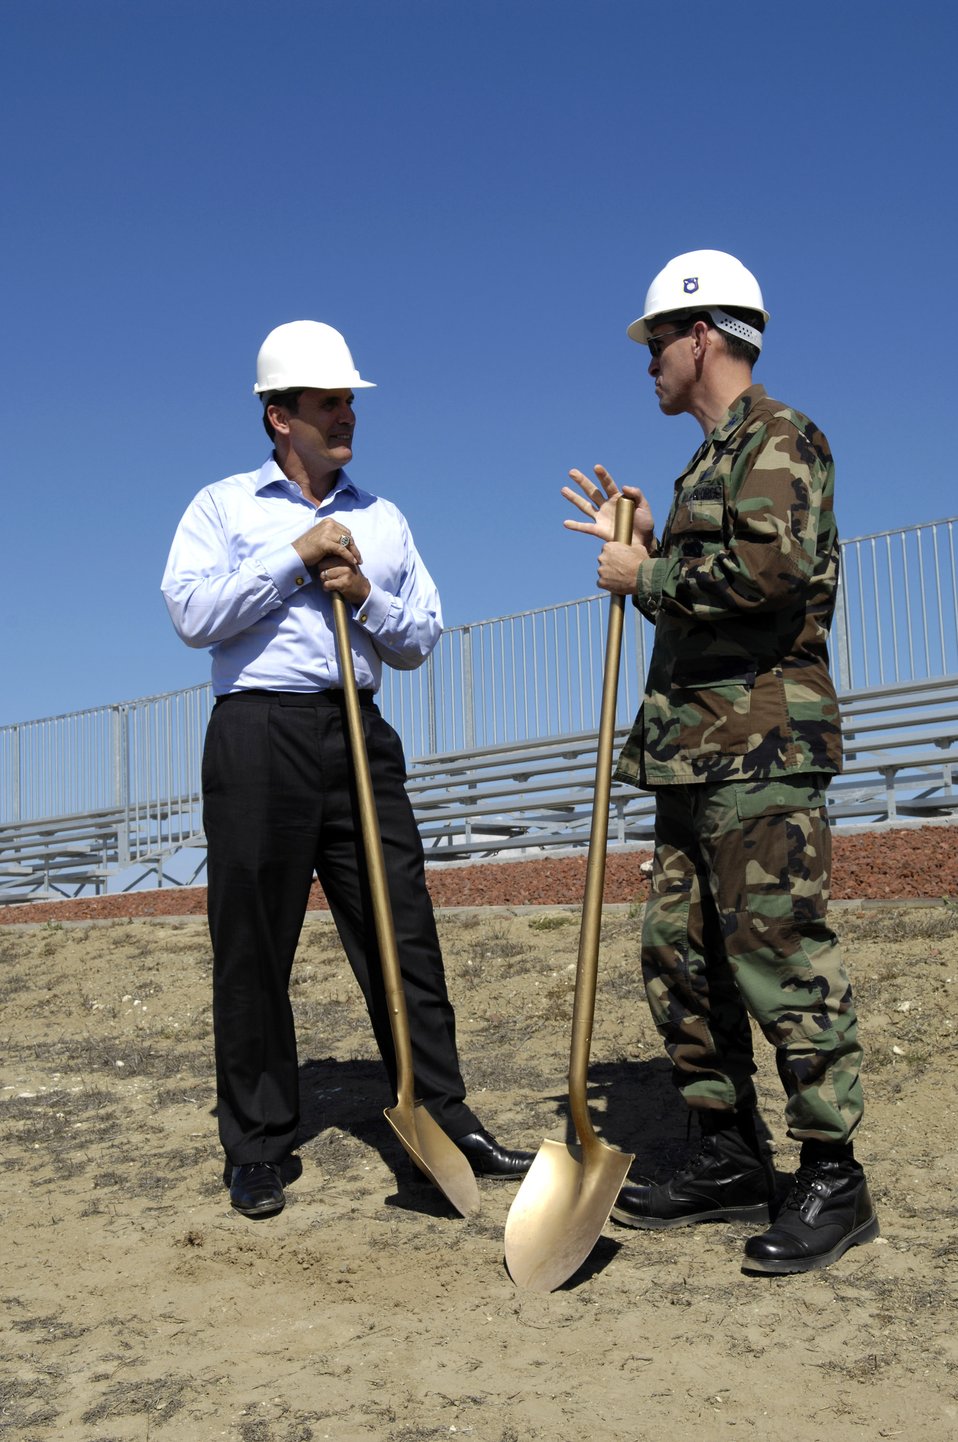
Groundwork begins for Reagan Memorial

Col. Steve Tanous and Riki Ellison prepare to break ground Aug. 29 for construction of the Ronald W. Reagan Missile Defense Site Memorial at Vandenberg Air Force Base, Calif. The limestone memorial, set to be completed in January 2008, will feature the bronze bust and plaque which was unveiled April 4, 2006, by former First Lady Nancy Reagan during a dedication of the Ronald W. Reagan Missile Defense Site. Colonel Tanous is the 30th Space Wing commander and Mr. Ellison is president and founder of Missile Defense Advocacy Alliance.